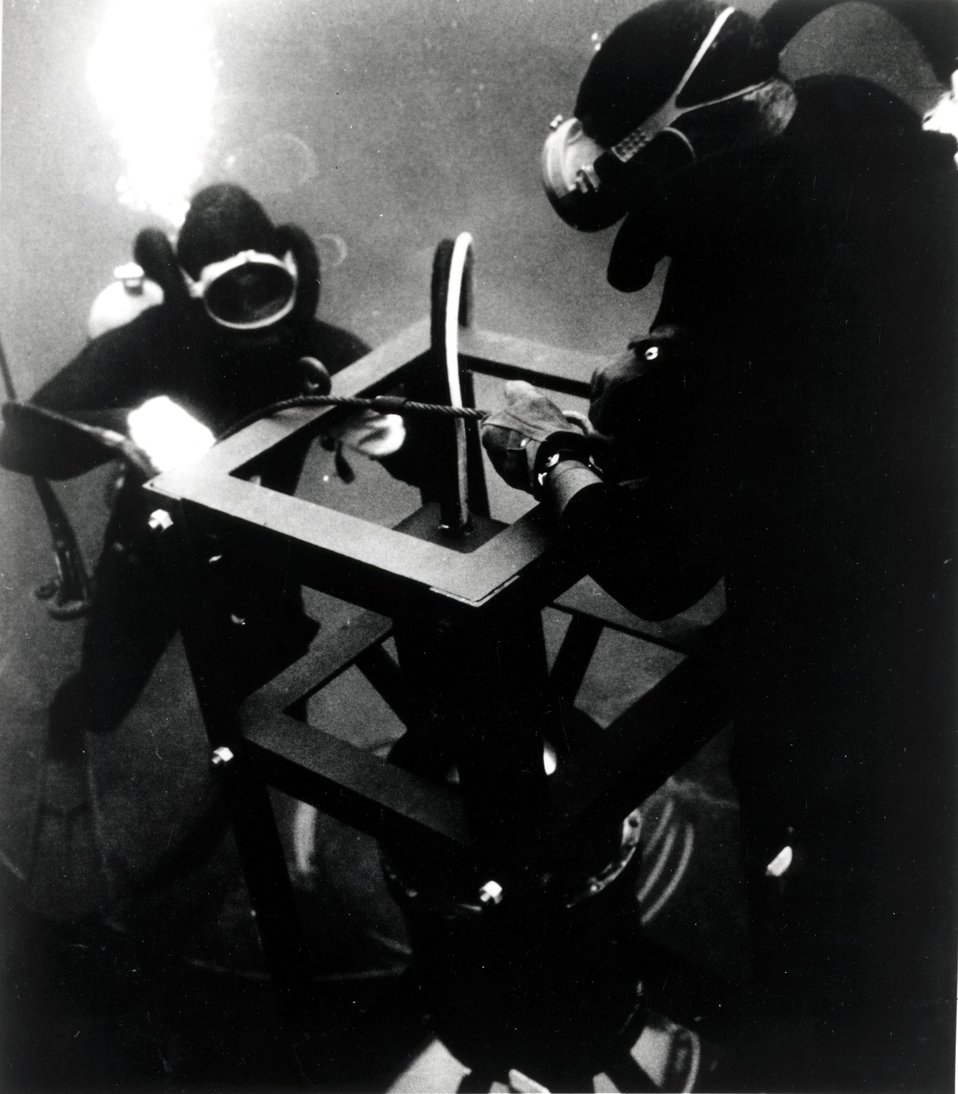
One of two special nuclear-powered SNAP-21 thermometric generators, suspended in a support frame, is shown being maneuvered into place by Navy frogmen on the ocean floor about 150 feet under the surface off San Clemente Island, near Long Beach, California.